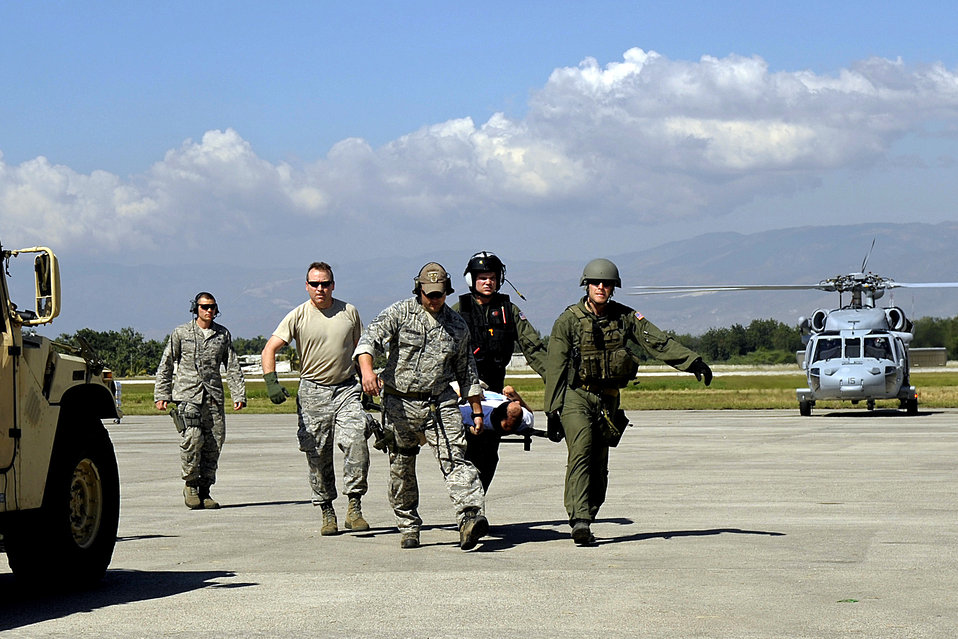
Haiti Earthquake Relief

Airmen from the Air Force Special Operations Command at Hurlburt Field, Fla., offload injured people in Port-au-Prince, Haiti, Jan. 15, 2010.